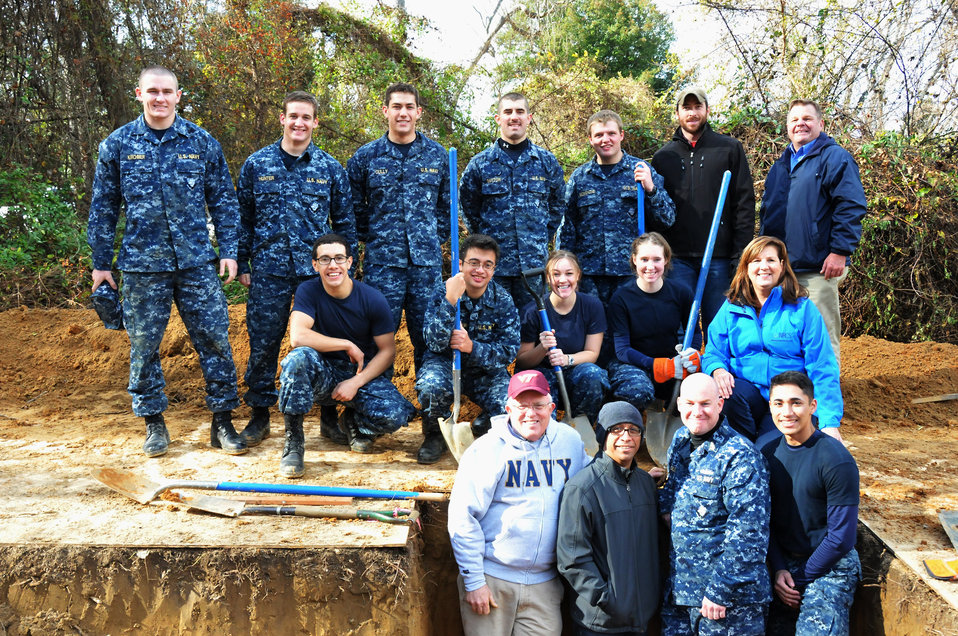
Goshen 2

U.S. Department of Agriculture (USDA) Natural Resource Conservation Service (NRCS) Maryland leadership joined the midshipmen for the service project.